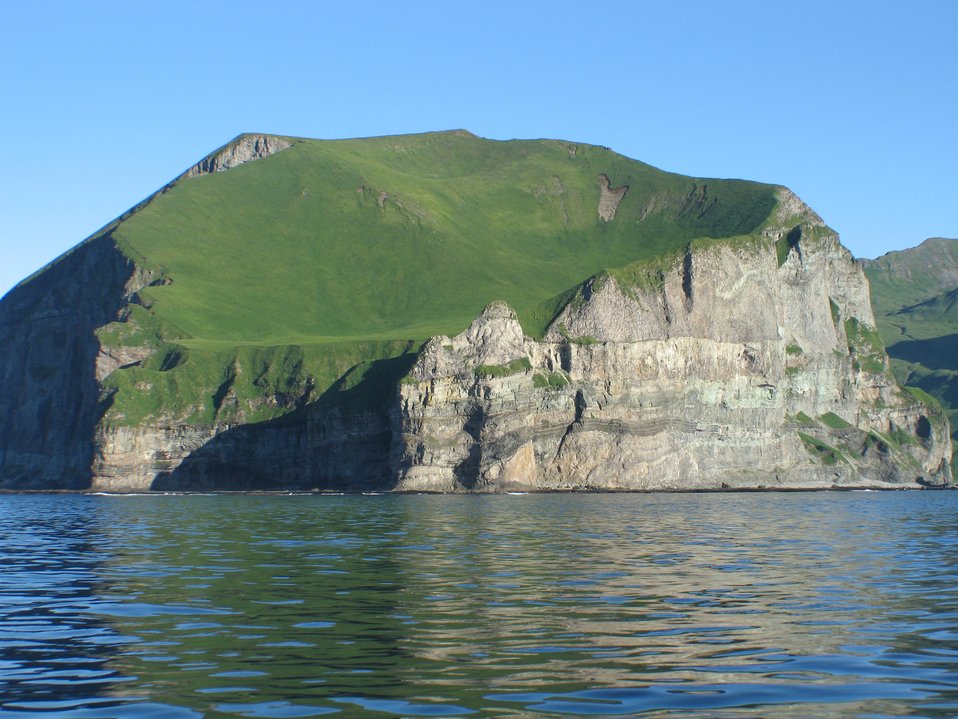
Cape Prominence on the south side of Unalaska Island